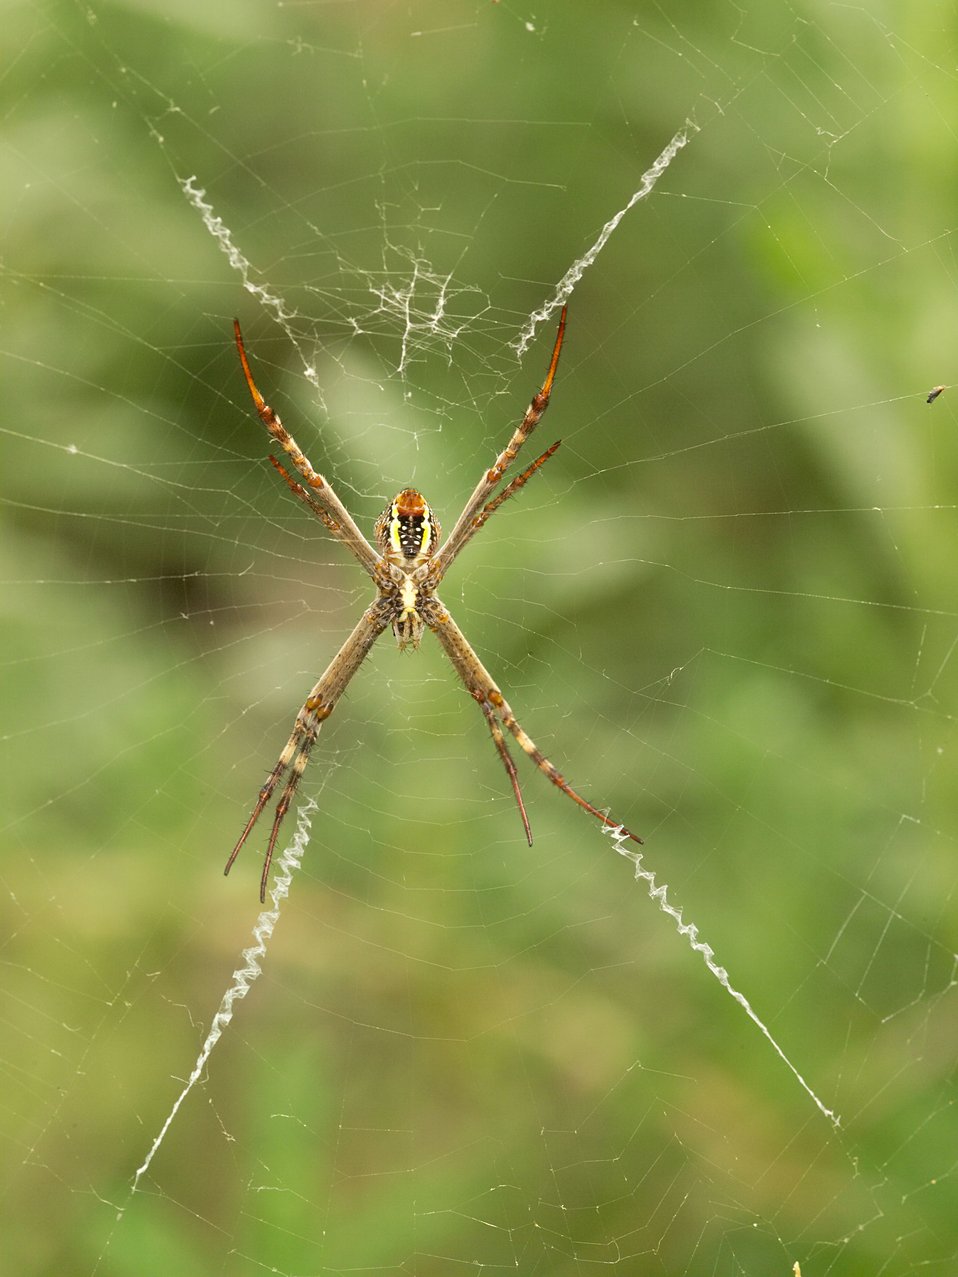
St Andrew's Cross spider.